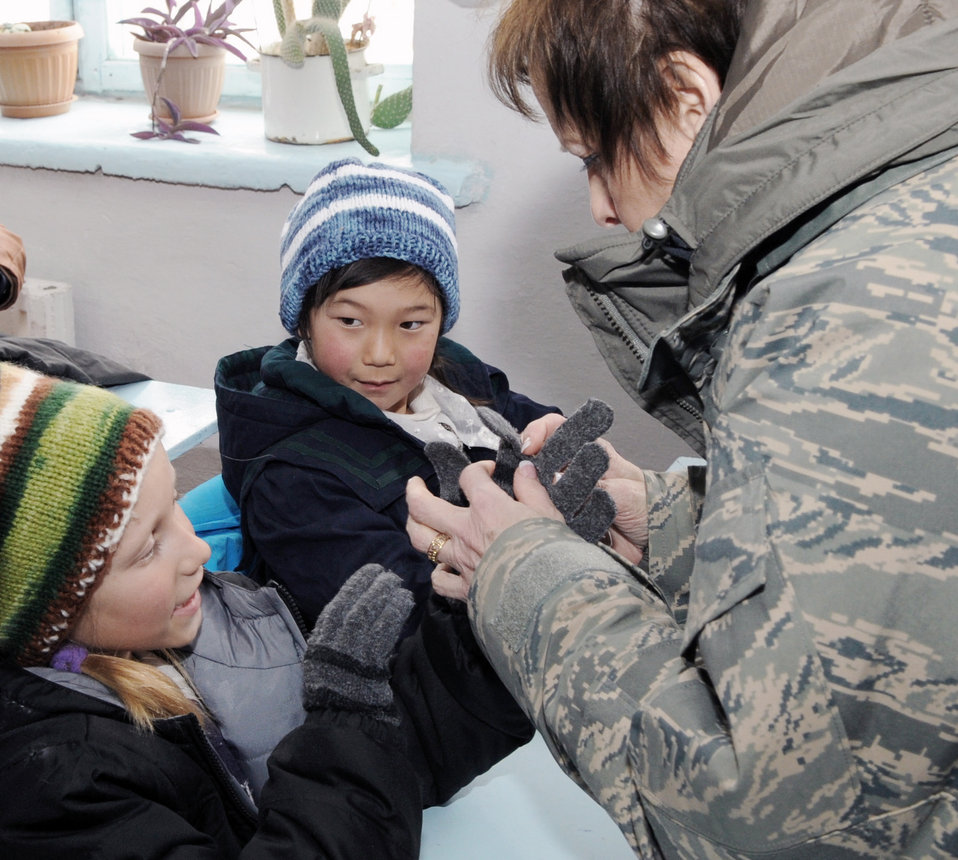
Generals visit Kyrgyz school

Maj. Gen. Kathleen D. Close hands gloves to two elementary school girls Feb. 9, 2010, at the Grozd School in Grozd Village, Kyrgyzstan. General Close is the director of logistics and sustainment for the Air Force Materiel Command.